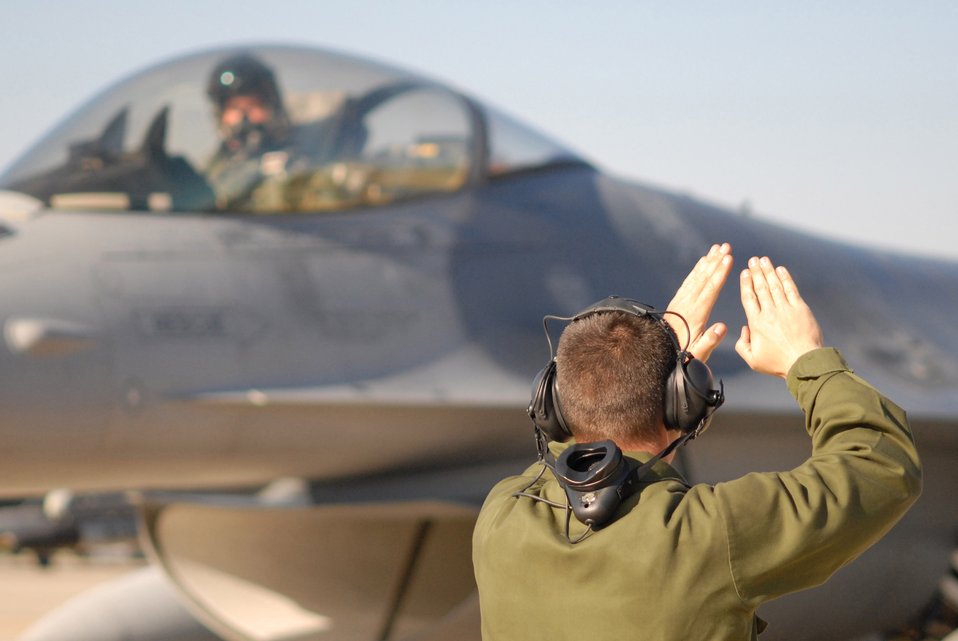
Iron Thunder roars through Shaw

Staff Sgt. Donald Slayton marshals an F-16 Fighting Falcon in support of Exercise Iron Thunder Feb. 7 at Shaw Air Force Base, S.C. The objective of the exercise is to prepare units for future contingency operations by offering a chance for players to be exposed to missions identical to those faced in combat. Sergeant Slayton is a 77th Fighter Squadron crew chief.